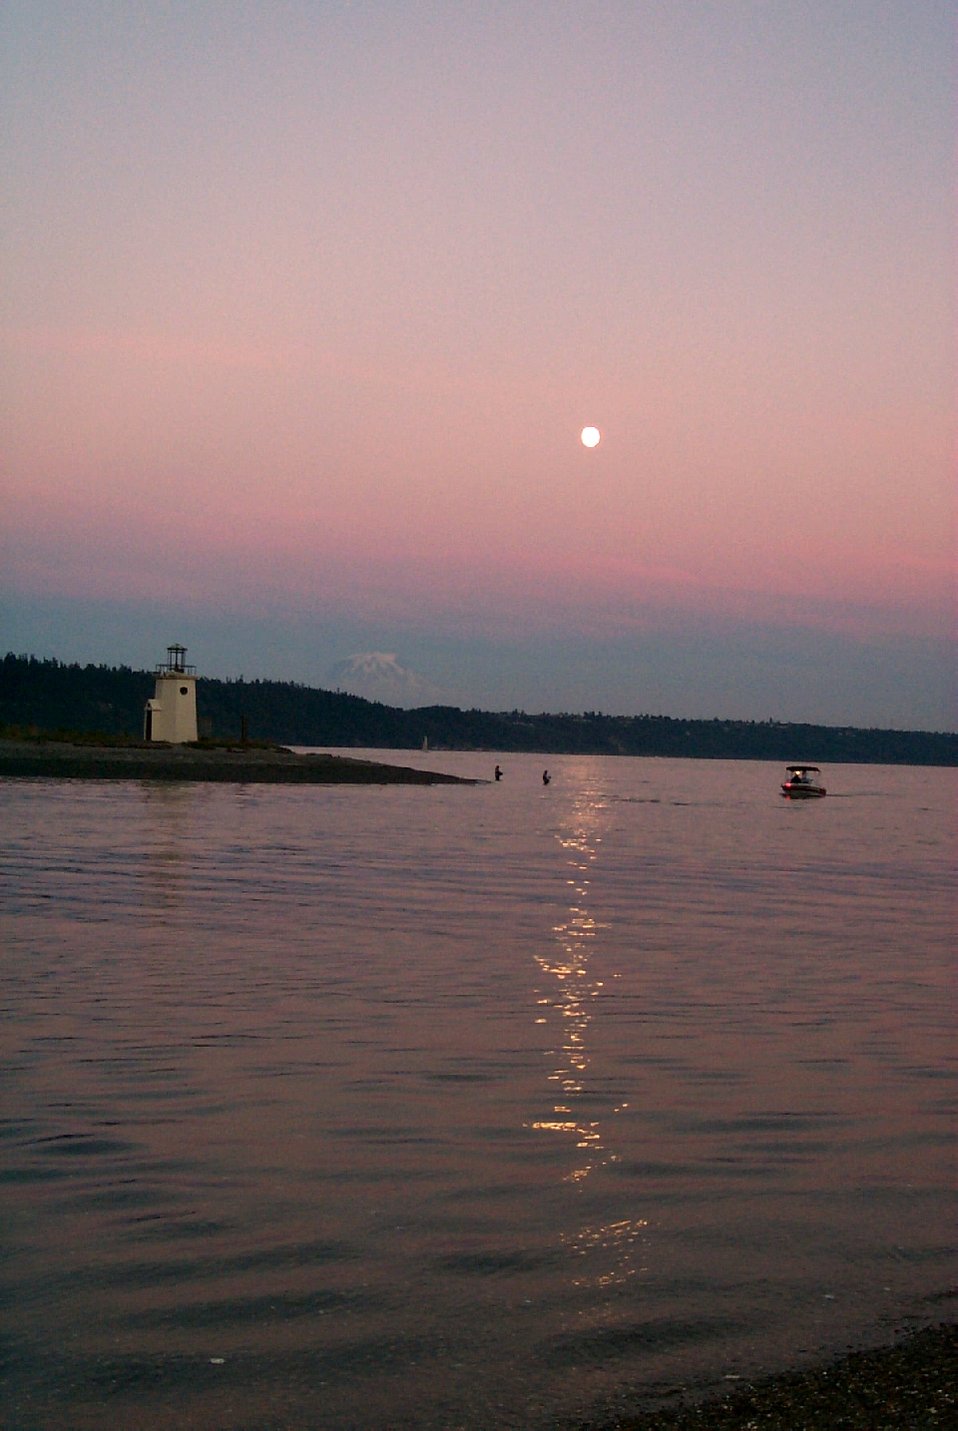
Moonrise over Gig Harbor as salmon fishermen try their luck in the shallows off the spit. Mt. Rainier is visible in the left center.